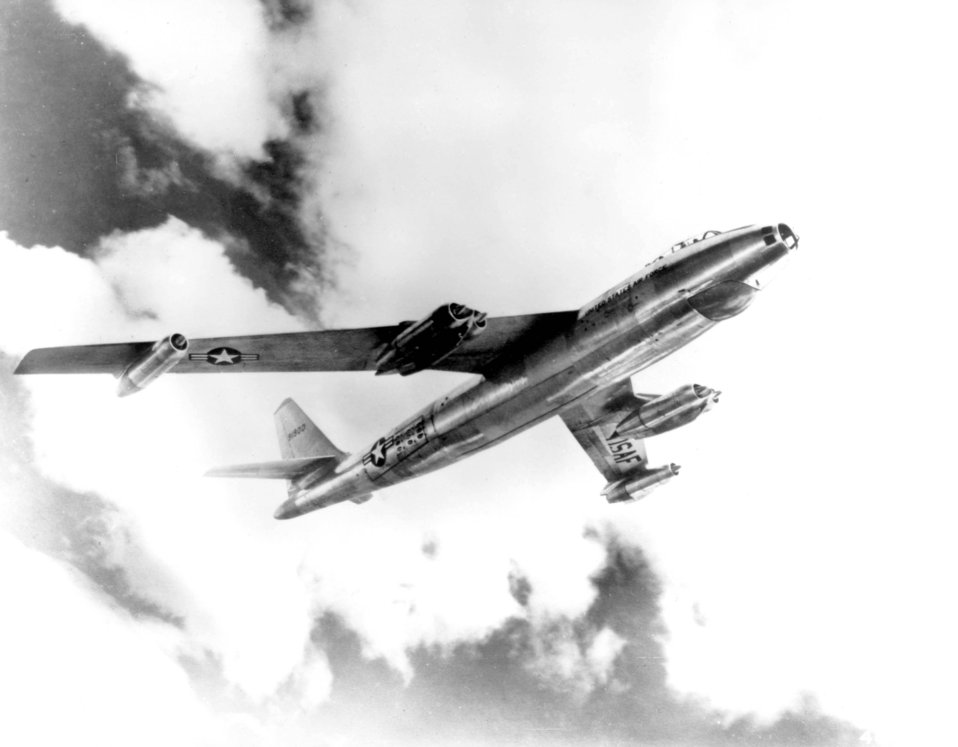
B-47A Stratojet

Wichita, Kansas, August 11, 1950 -- Boeing Airplane Company today released for the first time flight photographs of its newest model Air Force Stratojet bomber. The photographs were taken during a recnt test flight near here of one of the production model B-47A Stratojets, fastest known bomber in the world. Boeing is building a substantial quanitity of the Stratojets at Wichita, the first of the new planes having been rolled March 1 from the assembly line. The swept-wing bomber has a top speed of more than 600 miles an hour. It is powered by six General Electric J-47 turbo-jet engines, has a maximum gross takeoff weight of more than 186,000 pounds and can carry more than 20,000 pounds of bombs. An earlier model Stratojet, one of the two original XB-47's, last year spanned the nation from Moses Lake, Washington, to Andrews Air Force Base, Maryland, in 3 hours 46 minutes at an average speed of 607.8 miles per hour.